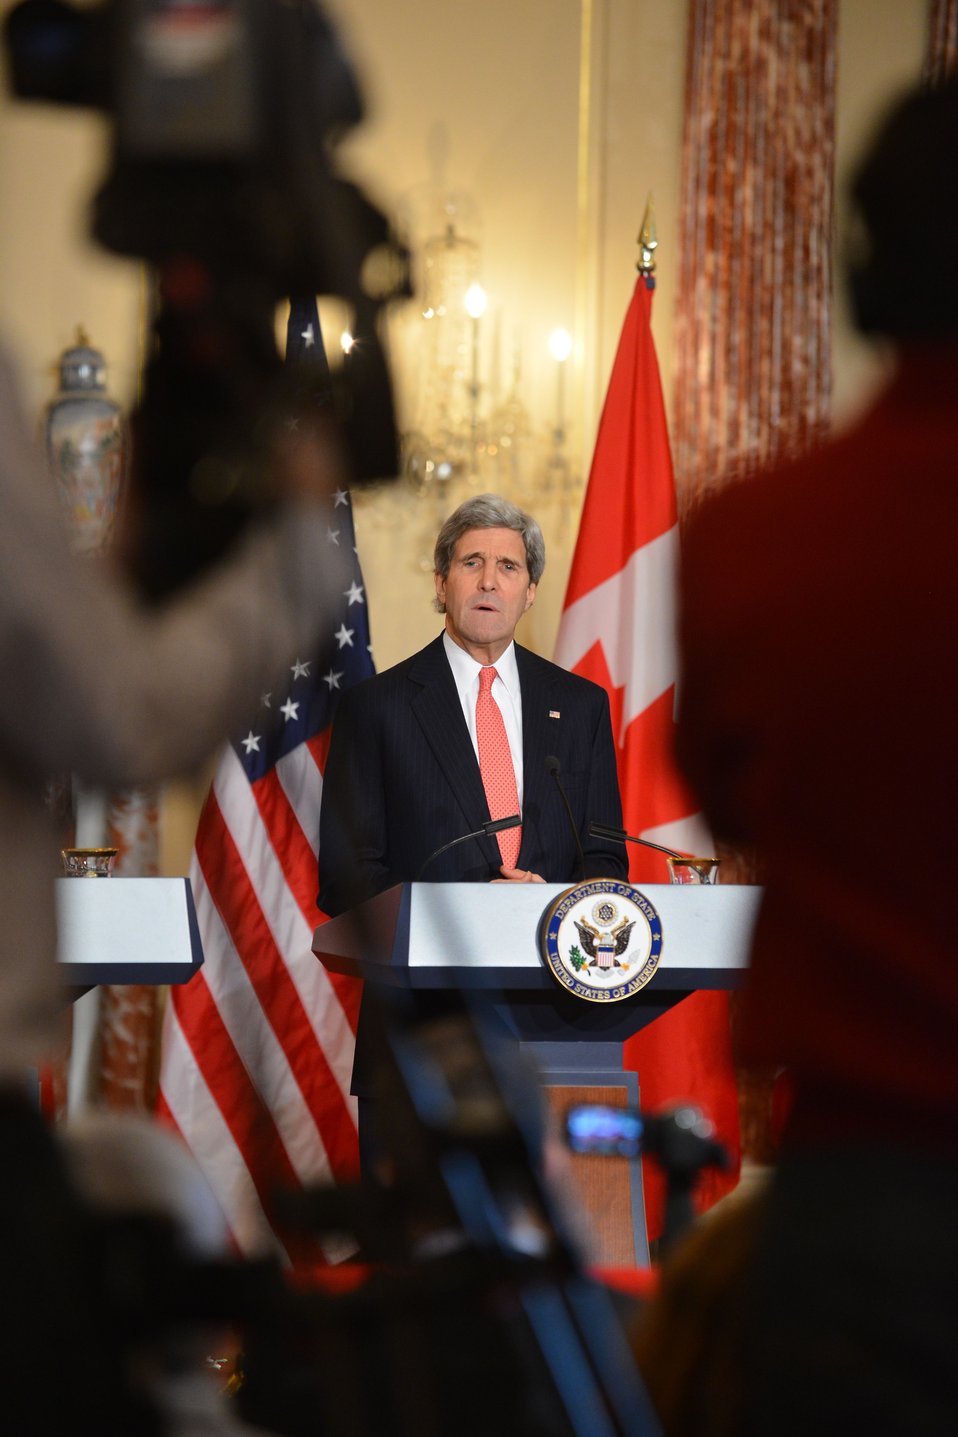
Secretary Kerry Addresses Reporters at the North American Trilateral Ministerial

U.S. Secretary of State John Kerry addresses reporters during the North American Trilateral Ministerial at the U.S. Department of State in Washington, D.C., on January 17, 2014.